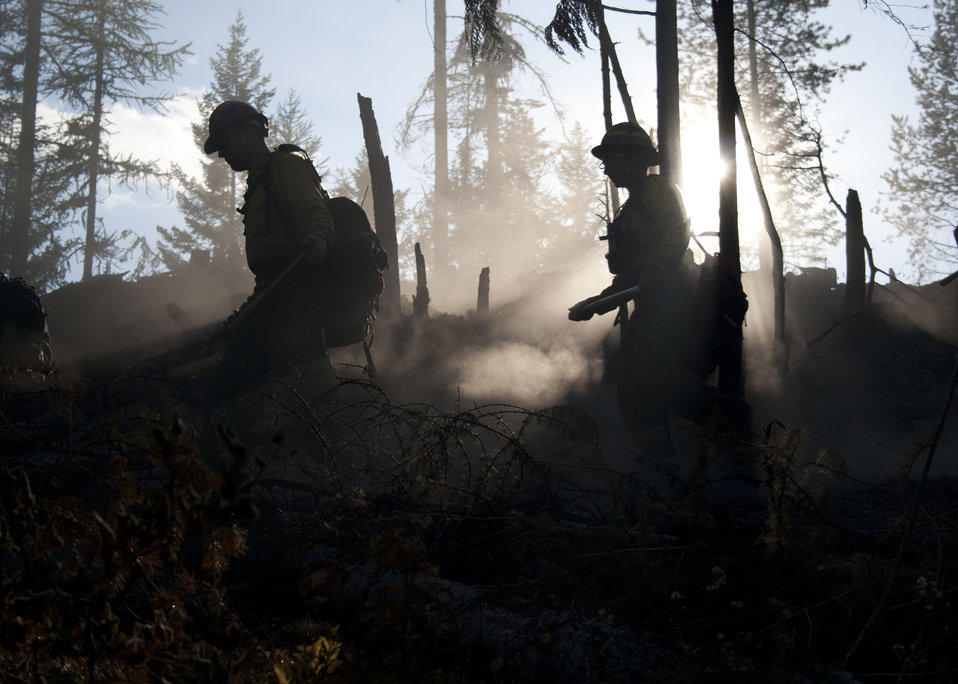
Firefighters supported by three fire engines, two helicopters, two water tenders, a dozer and an air tanker battled to contain the 90 acre Rogers Fire located on Mt. Rogers five miles west of Aladdin, WA on the Colville National Forest. Firefighters worked under adverse conditions with steep terrain and gusting winds to reduce the loss of timber and protect the Rogers Mountain Trail. The Rogers Fire began on Aug. 9, 2011 and was controlled by Aug. 19, 2011 with mop up crews ensuring that no flare-ups occurred. Colville National Forest has 1.1 million acres in northeastern Washington and includes the Kettle River, Selkirk Mountain ranges, and the upper reaches of the Columbia River.